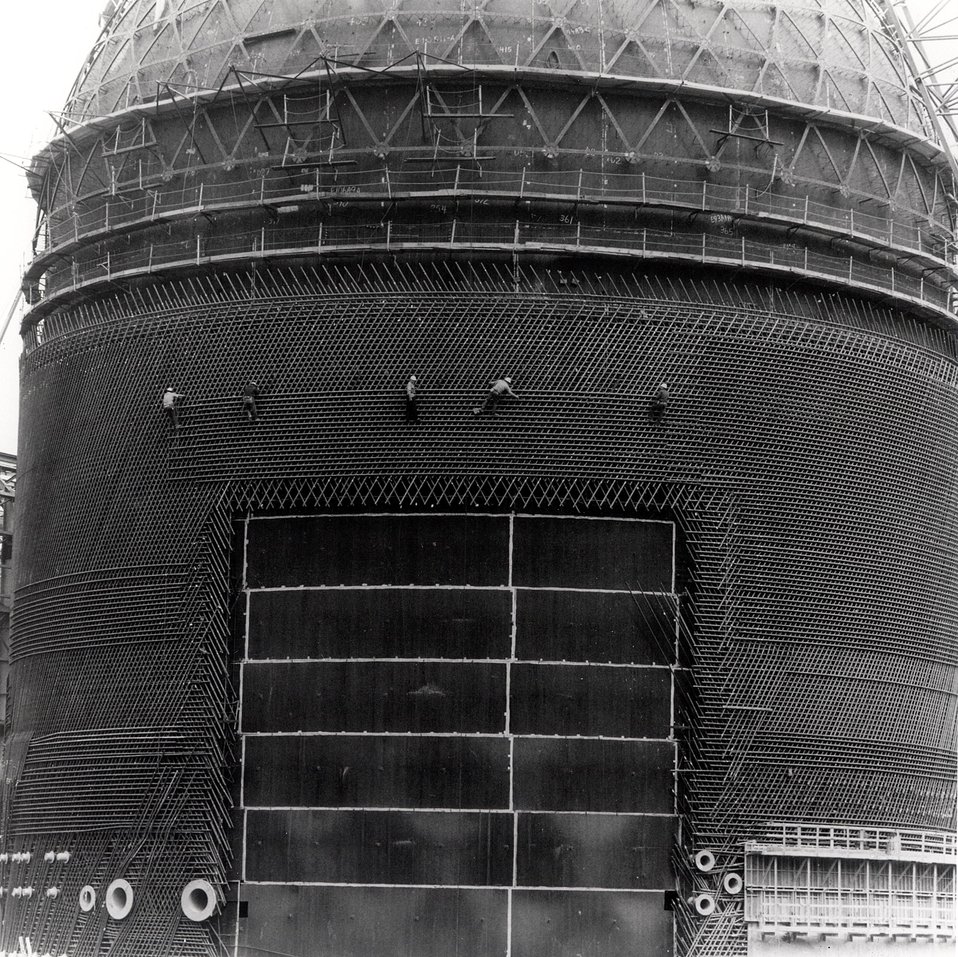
At Pacific Gas & Electric company's nuclear power plant project near Diablo Canyon in San Luis Obispo County, five steelworkers carefully tie together six layers of 2.25'- diameter reinforcing bars. Circa 1972.